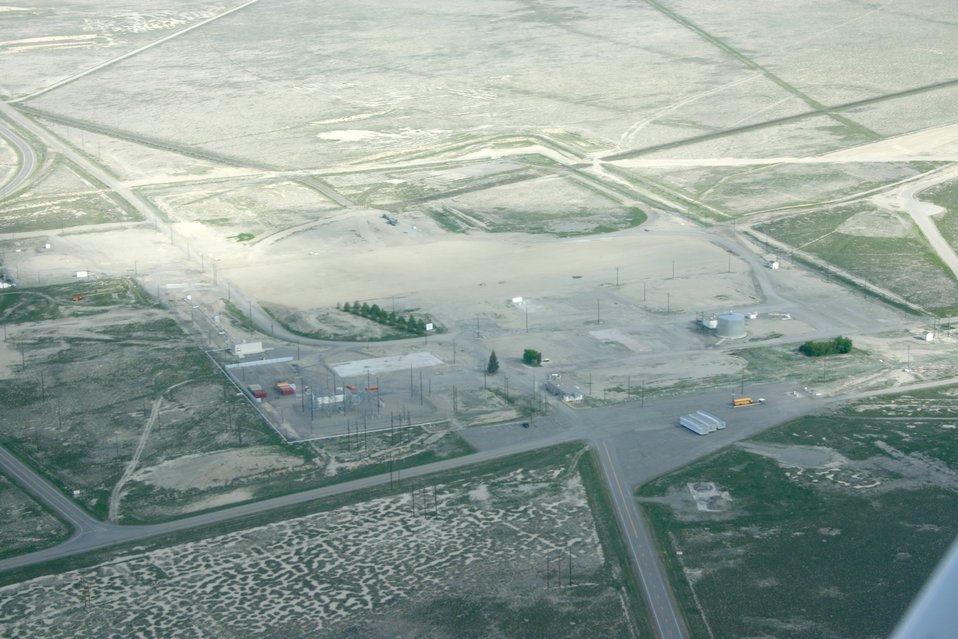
ID Test Area North - After

Test Area North (TAN), after cleanup/demolition